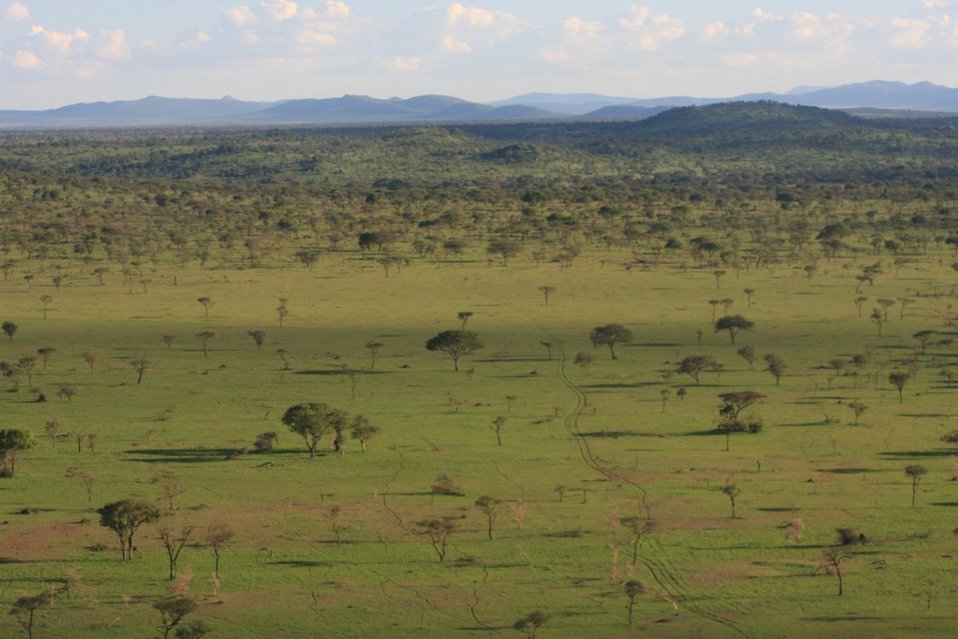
Rhino habitat